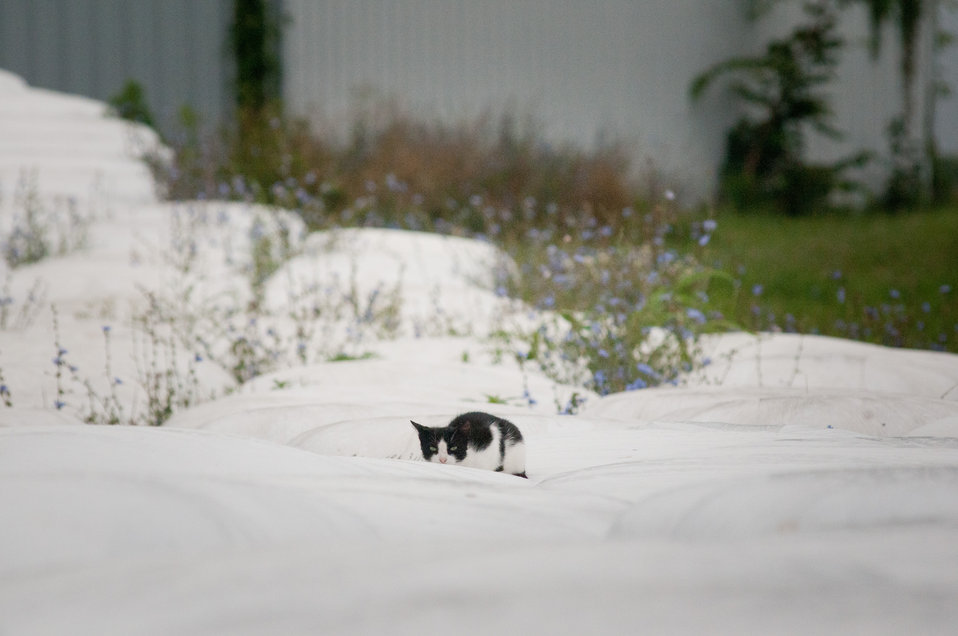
A farm cat can see over a broad area of the farm from atop white plastic wrapped bales of pasture grass and alfalfa that have been fermenting for months to create sweet silage that stores well and can be used to feed cattle at varying amount all year long at Nick’s Organic Farm is owned by Nick Maravell in Adamstown, MD on Friday, July 12, 2013. The fermentation process improves the taste and increases the vitamin levels in it. The farm produces Black Angus beef, chicken, turkey, eggs, hay, soybeans, corn, alfalfa, orchard grass, rye; and other crops. The cattle are 100% grass-fed receiving certified organic pasture, certified organic hay (in winter), water and mineral salts mixed with sea kelp. The cattle are not fed hormones, antibiotics or animal products. Poultry feed from grain is ground from organic grain. The poultry also graze on organic pastures. The farm has conducted on-farm research with federal, state and non-profit agencies to refine organic practices. An organization such as the U.S. Department of Agriculture (USDA) Agricultural Research Service (ARS) center in Beltsville has been able to conduct research to improve organic crops and to breed and manage the cattle so that they have. George Kloph is the farm assistant at this site.